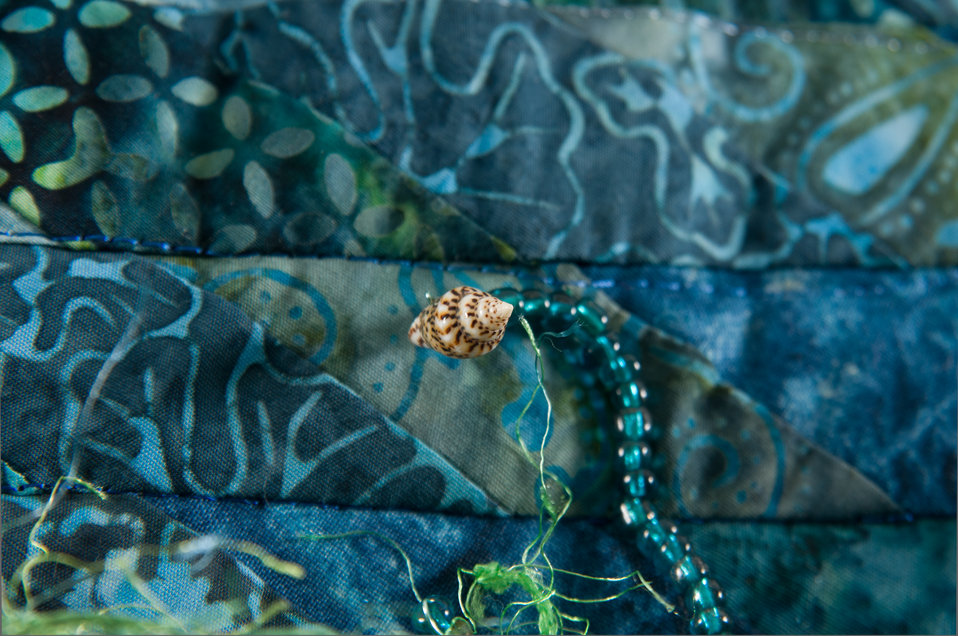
Online Viewer's Choice entries of the 2013 Art & Agriculture, Tuesday, July 9, 2013, in the South Building, Washington, D.C. Themes were expressed by employees from across the department and the contest was open to full-time and part-time USDA employees. Winning artwork will be displayed till the end of the year. U.S. Artistic expression is a creative outlet that is vital for an individual to grow and develop.